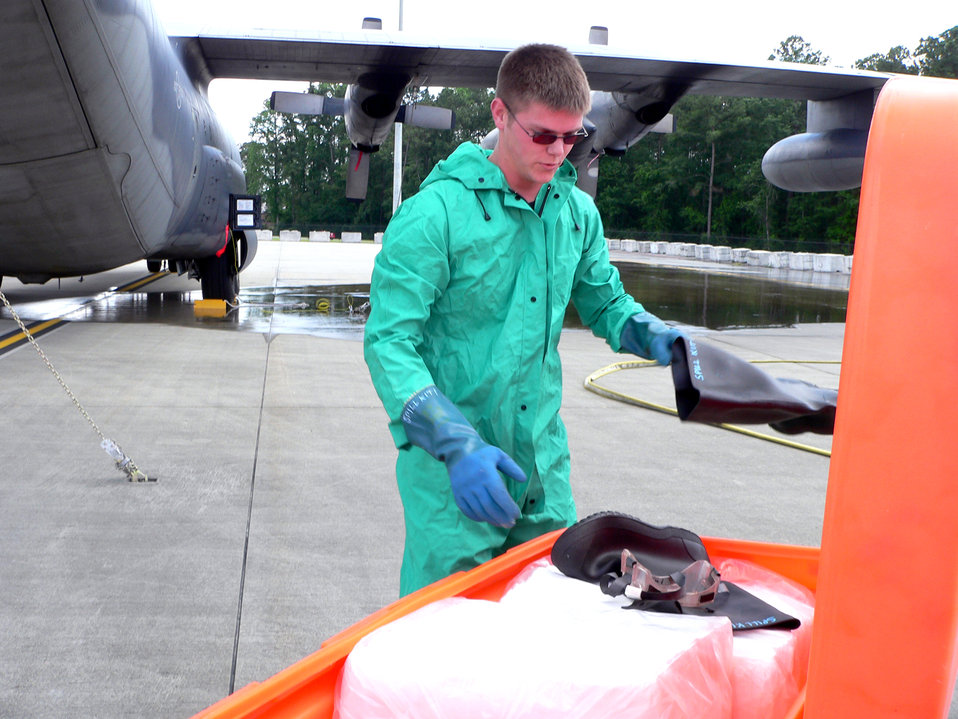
Moody prepares for hurricane season

Senior Airman Shawn Buck grabs rubber boots during a mock fuel spill on the Moody Air Force Base, Ga., flightline on Wednesday, May 17, 2006. The simulated spill was one of the scenarios during a hurricane evacuation exercise in preparation for the upcoming hurricane season. Airman Buck is crew chief with the 347th Aircraft Maintenance Squadron.